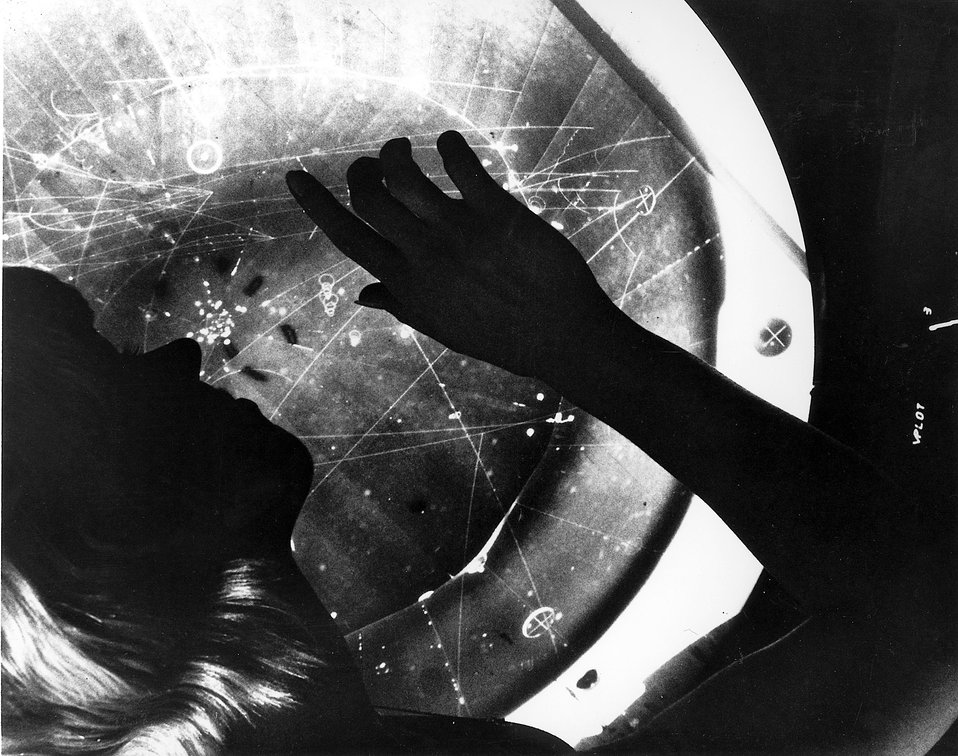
A technician examines one of these photographs during measurement by the automatic computer scanning system, POLLY.
c.1972